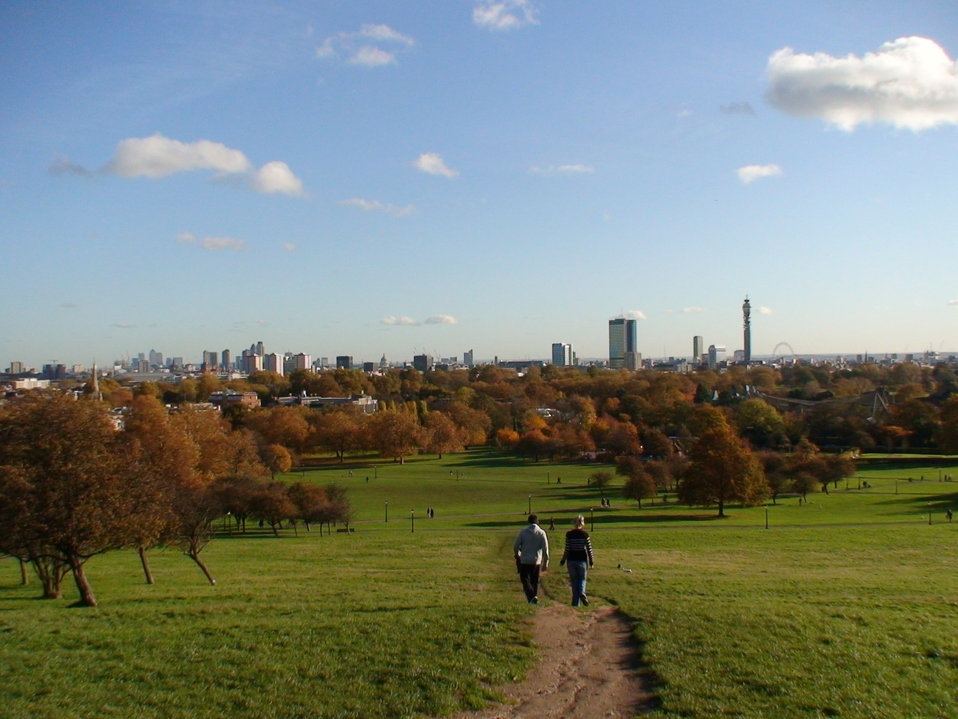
The view of London from the top of Primrose Hill The photograph was taken by myself (Ben Dickson) on November 19th 2006 with a Sony HDR-HC3 high definition digital camcorder.